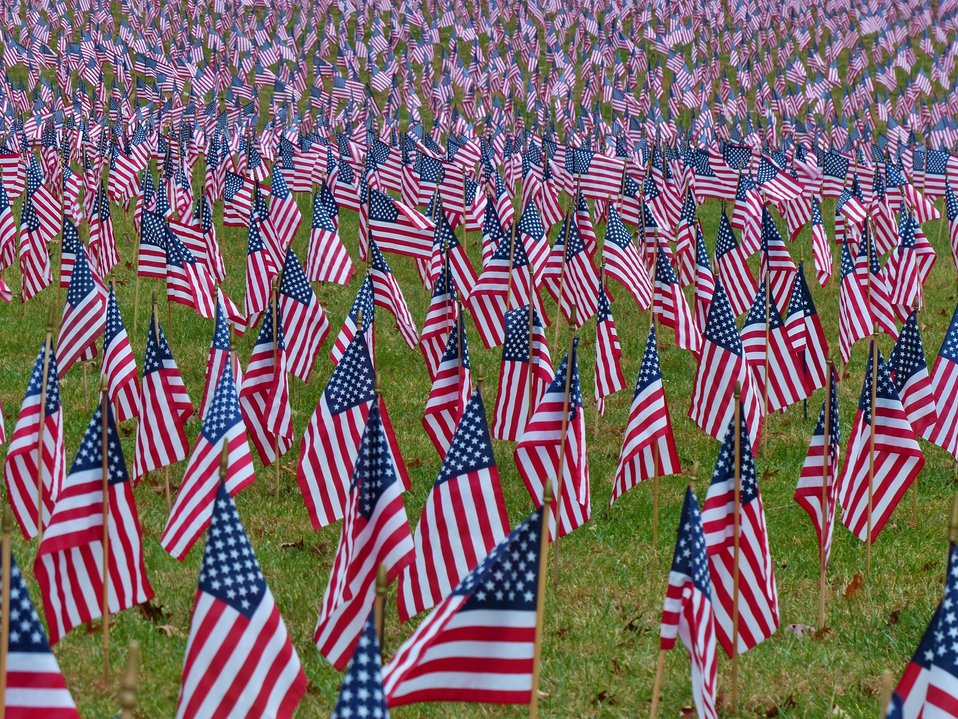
Flags

American flags.